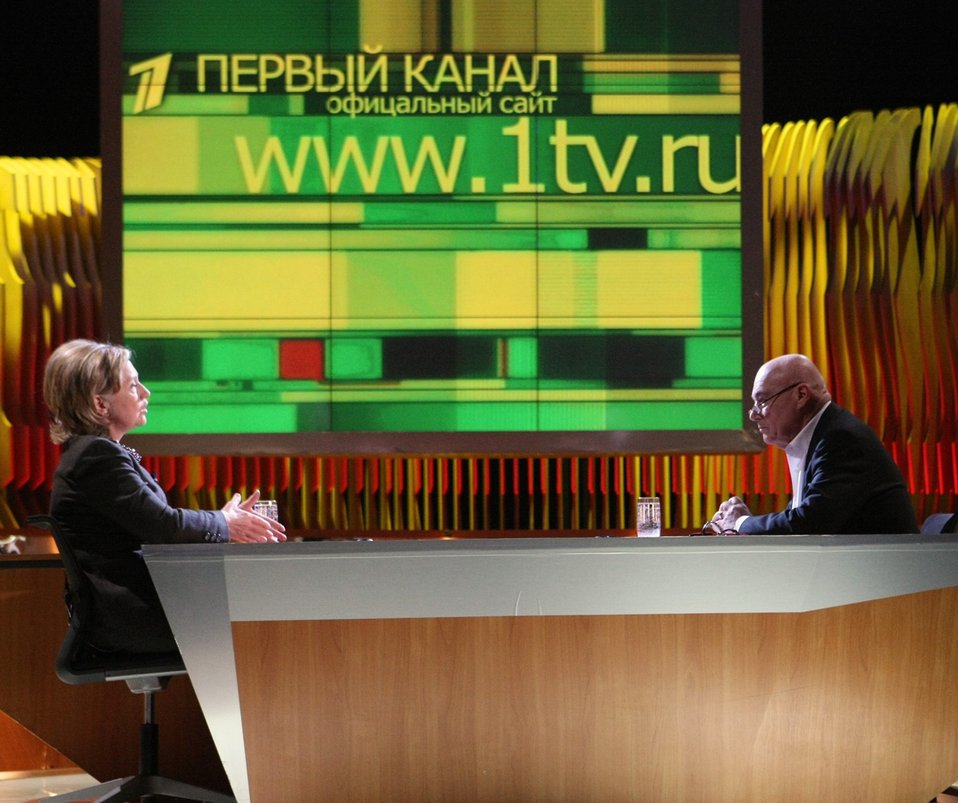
Secretary Clinton With Vladimir Pozner

Vladimir Pozner interviews U.S. Secretary of State Hillary Rodham Clinton on the 'Pozner Show' in Moscow, March 19, 2010.